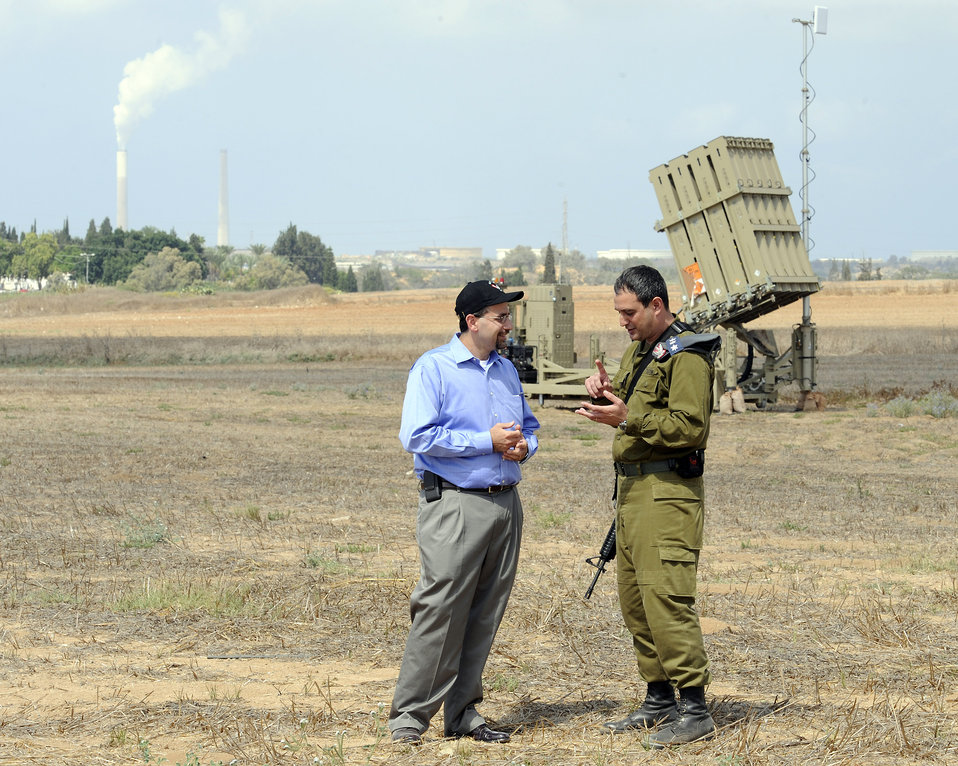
Ambassador Shapiro Tours the Iron Dome Battery in the South of Israel

U.S. Ambassador to Israel Daniel B. Shapiro, hosted by Captain Elad Tzinman, Israeli Air Force Battery Commander, and Colonel Tzvika Chaimovitch, Israeli Air Force 167 Wing Commander, travels to the south of Israel for a tour of the Iron Dome Battery in Ashkelon, Israel, on August 9, 2011.